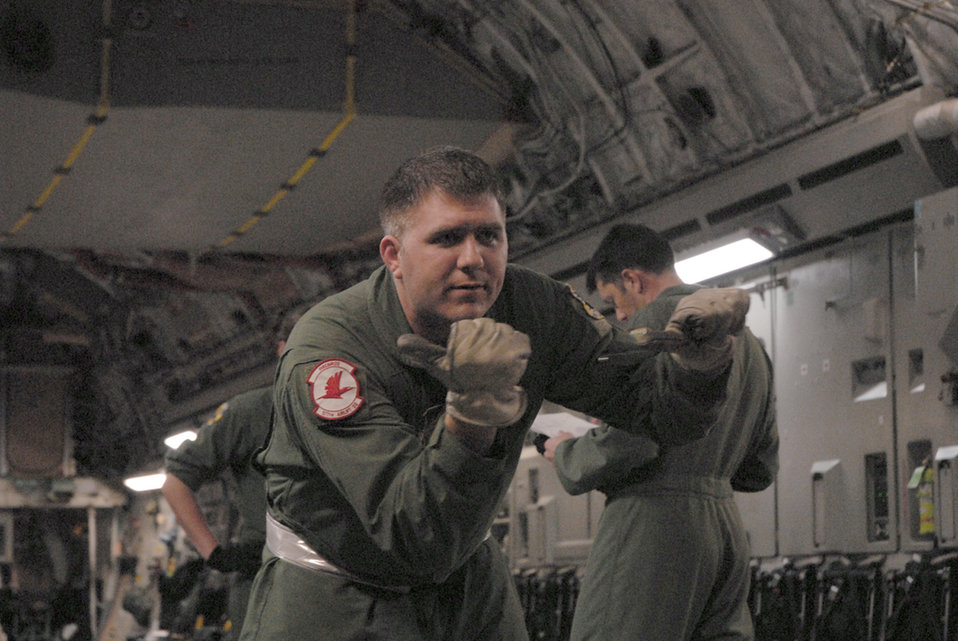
517th Airlift Squardron supports relief efforts in Japan

Joint Base Elmendorf-Richardson, Alaska -- Air Force Staff Sgt. Adam Koerner, 517th Airlift Squadron loadmaster, Joint Base Elmendorf-Richardson, Alaska, directs generators into a C-17 Globemaster III for humanitarian relief, headed for Misawa Air Base Japan.